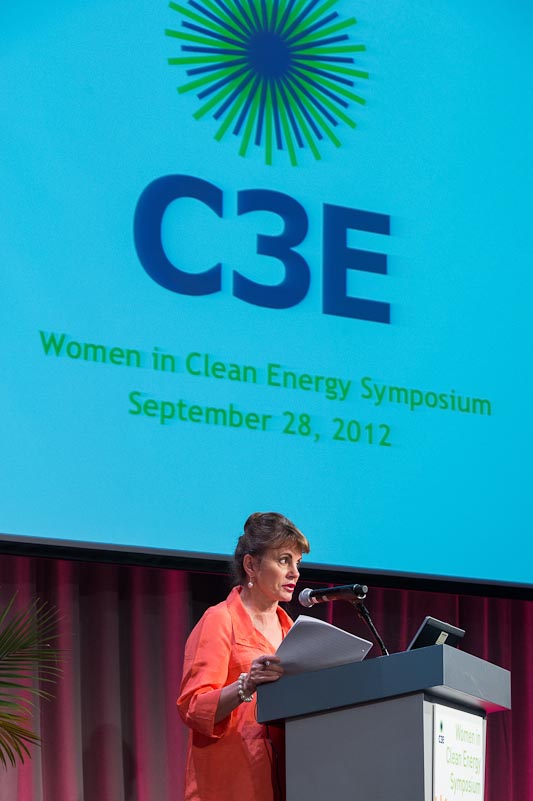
Susan Hockfield, President Emerita, MIT